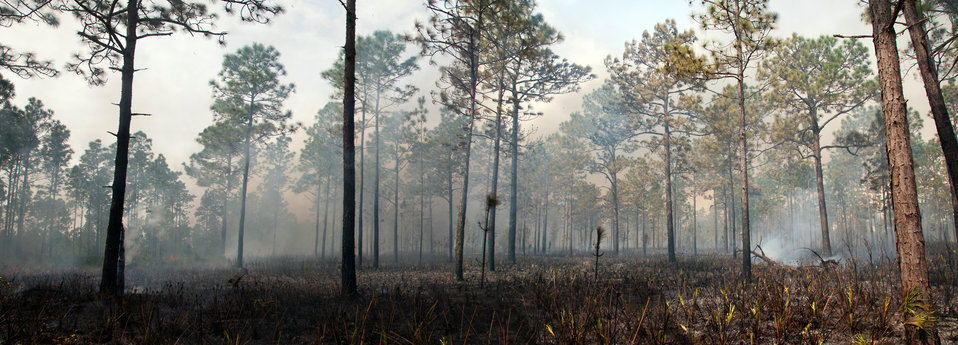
Lake Woodruff Volusia 5 Prescribed Fire Febuary 2014

Immediately post fire you can see that flame lengths and scorch heights on the pine trees are minimal, the palmetto will green back up in a matter of months. On February, 12 2014 USFWS firefighters conducted a 137 acre prescribed fire at Lake Woodruff NWR to reduce the wildfire risk and enhance the wildlife habitat on the southern end of the refuge.